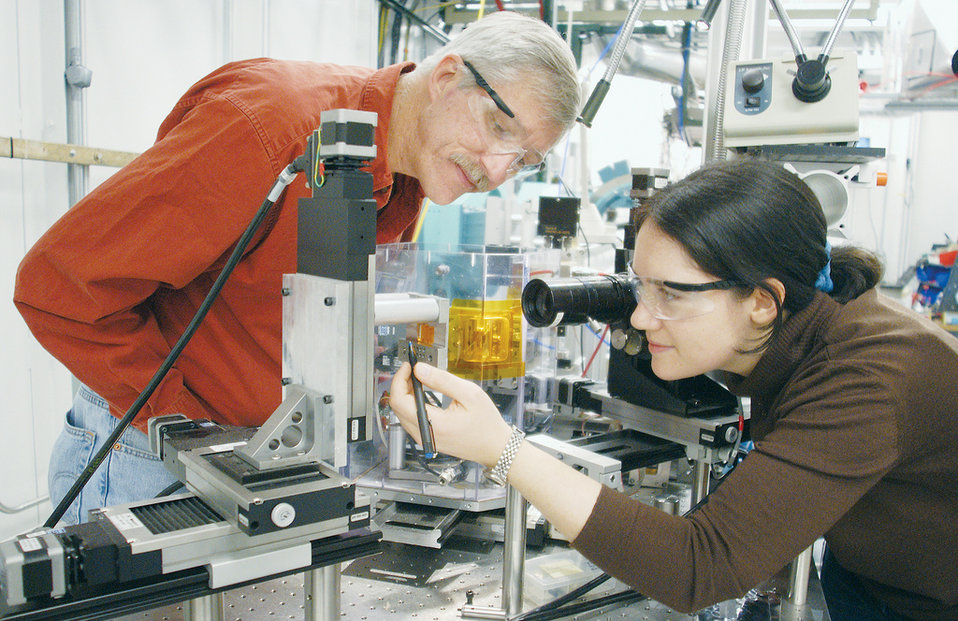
Studying Alzheimer disease at the APS.

Mark Davidson, University of Florida and Joanna Collingwood, Keele University, United Kingdom, who is supported by a UK Alzheimer's, research Fellowship and Dunhill Medical Trust, Align a sample of Alzheimer's brain tissue at the Advanced Photon Source microfocus facility.